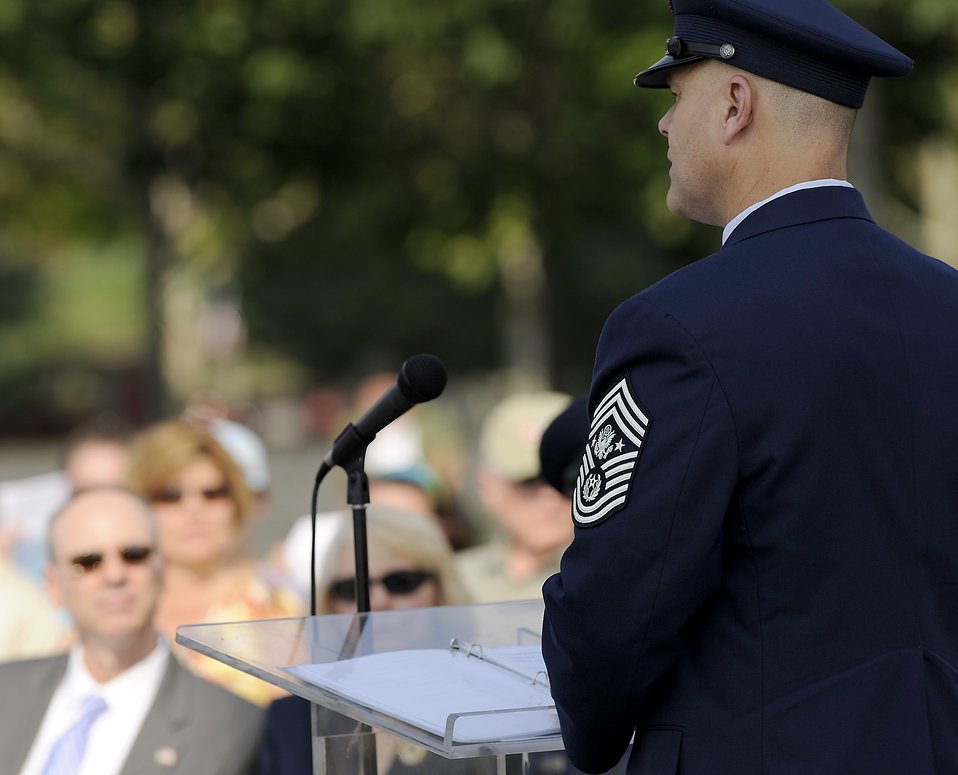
CMSAF Reads Honors Fallen on Memorial Day

Chief Master Sgt. of the Air Force James Roy reads the names of Airmen who were lost in combat in the past year during a Memorial Day ceremony May 30, 2011, at the Air Force Memorial in Arlington, Va. The fallen heroes also were honored by wreaths that were presented by members of several organizations.